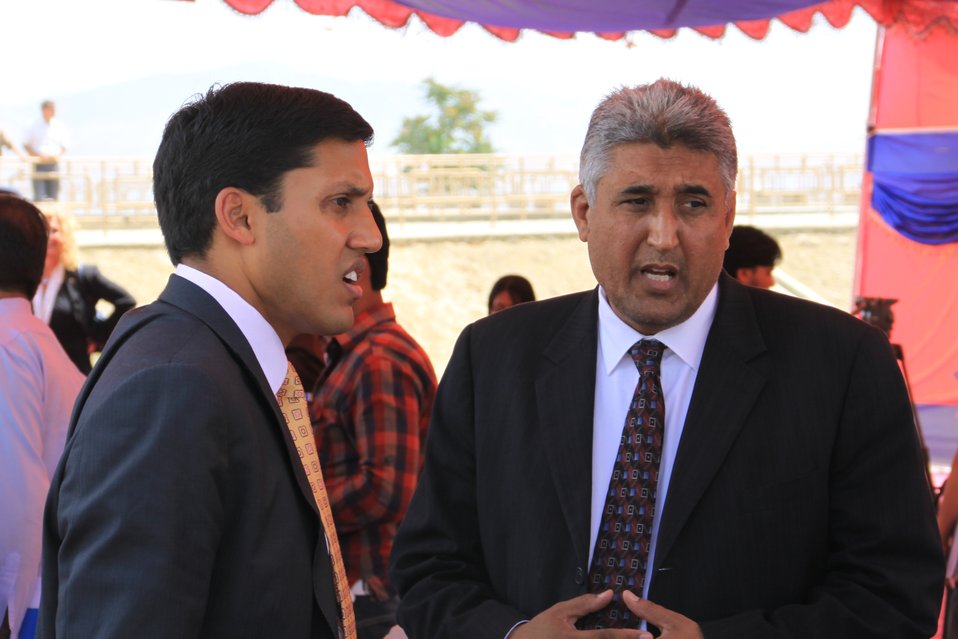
Badam Bagh Farm